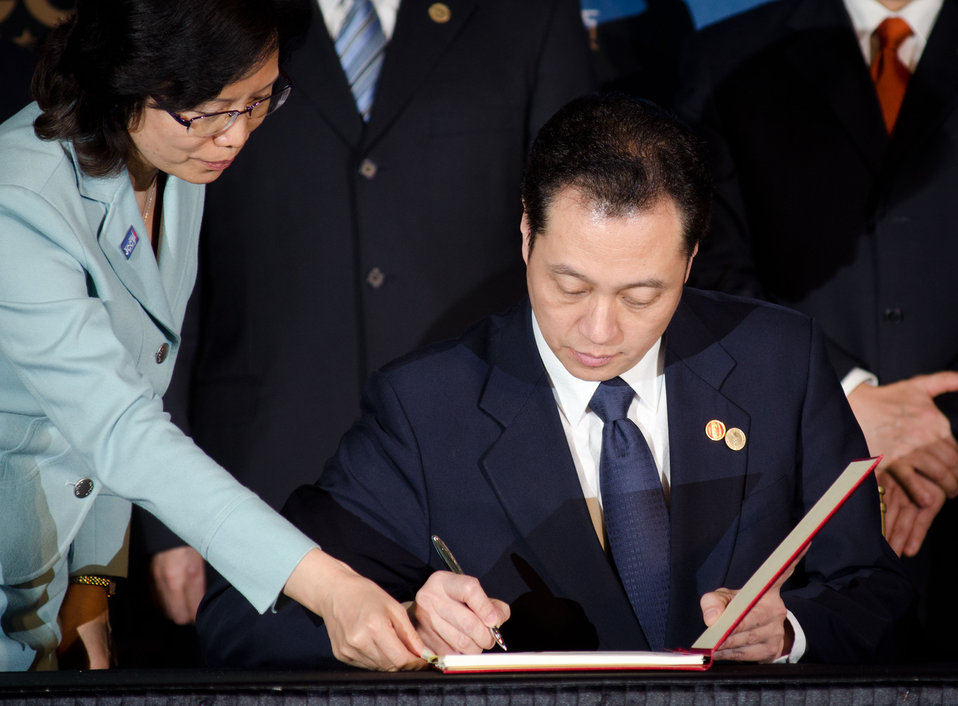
Chinese Ministry of Commerce Vice Minister Wang Chao, signs the Memorandum of Understanding between the U.S. Trade and Development Agency and the Ministry of Commerce of the People’s Republic of China in Support of U.S.-China Trade Cooperation during a signing ceremony at the 23rd U.S.-China Joint Commission of Commerce and Trade (JCCT), at the Andrew W. Mellon Auditorium in Washington, D.C. on Wednesday, Dec. 19, 2012. The JCCT holds high-level plenary meetings on an annual basis to review progress made by working groups that focus on a wide variety of trade issues. These working groups meet throughout the year to address topics such as intellectual property rights, agriculture, pharmaceuticals and medical devices, information technology, tourism, commercial law, environment, and statistics.